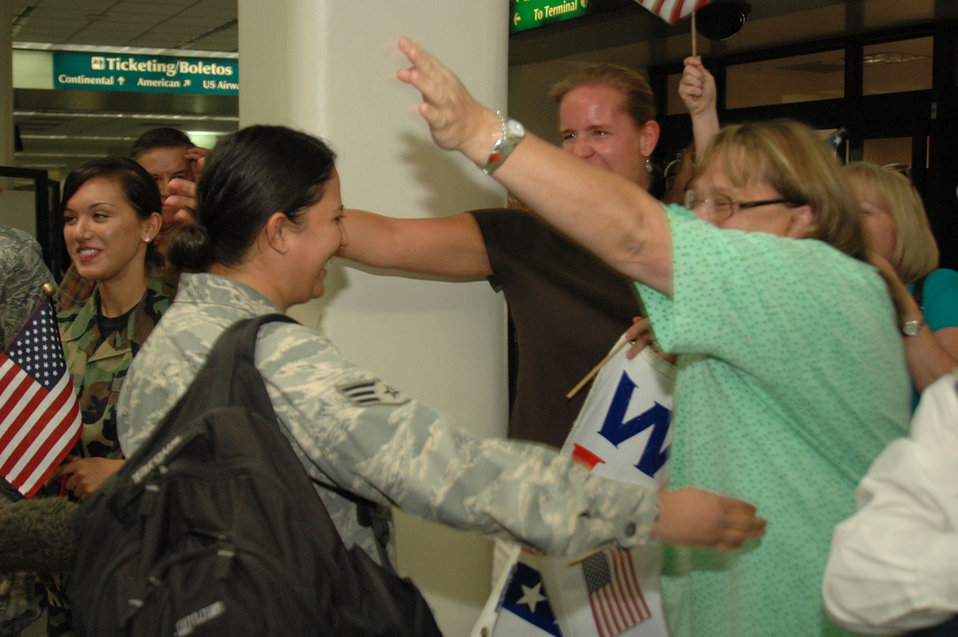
Welcome home

A member of the 433rd Civil Engineer Squadron is welcomed home after six months in Afghanistan Sept. 22 in San Antonio. Family and friends met them at the San Antonio Airport with banners and cheers. The Airmen built and repaired structures at Bagram Airfield, Afghanistan, and forward operating locations. They installed air-conditioning units for Soldiers and brought older buildings up to U.S. military construction codes.